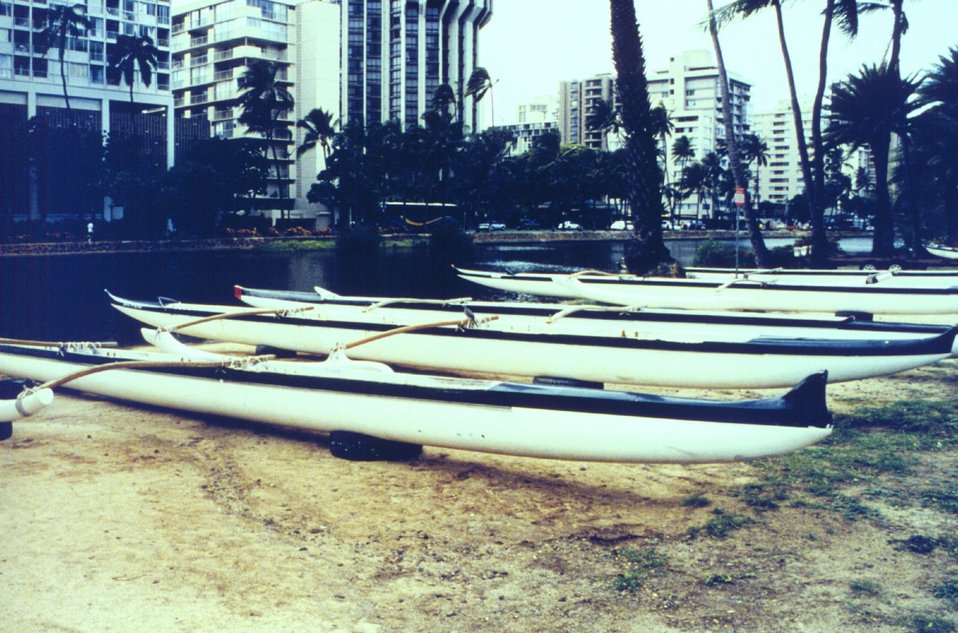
Outrigger canoes along the Ali Wai Canal.